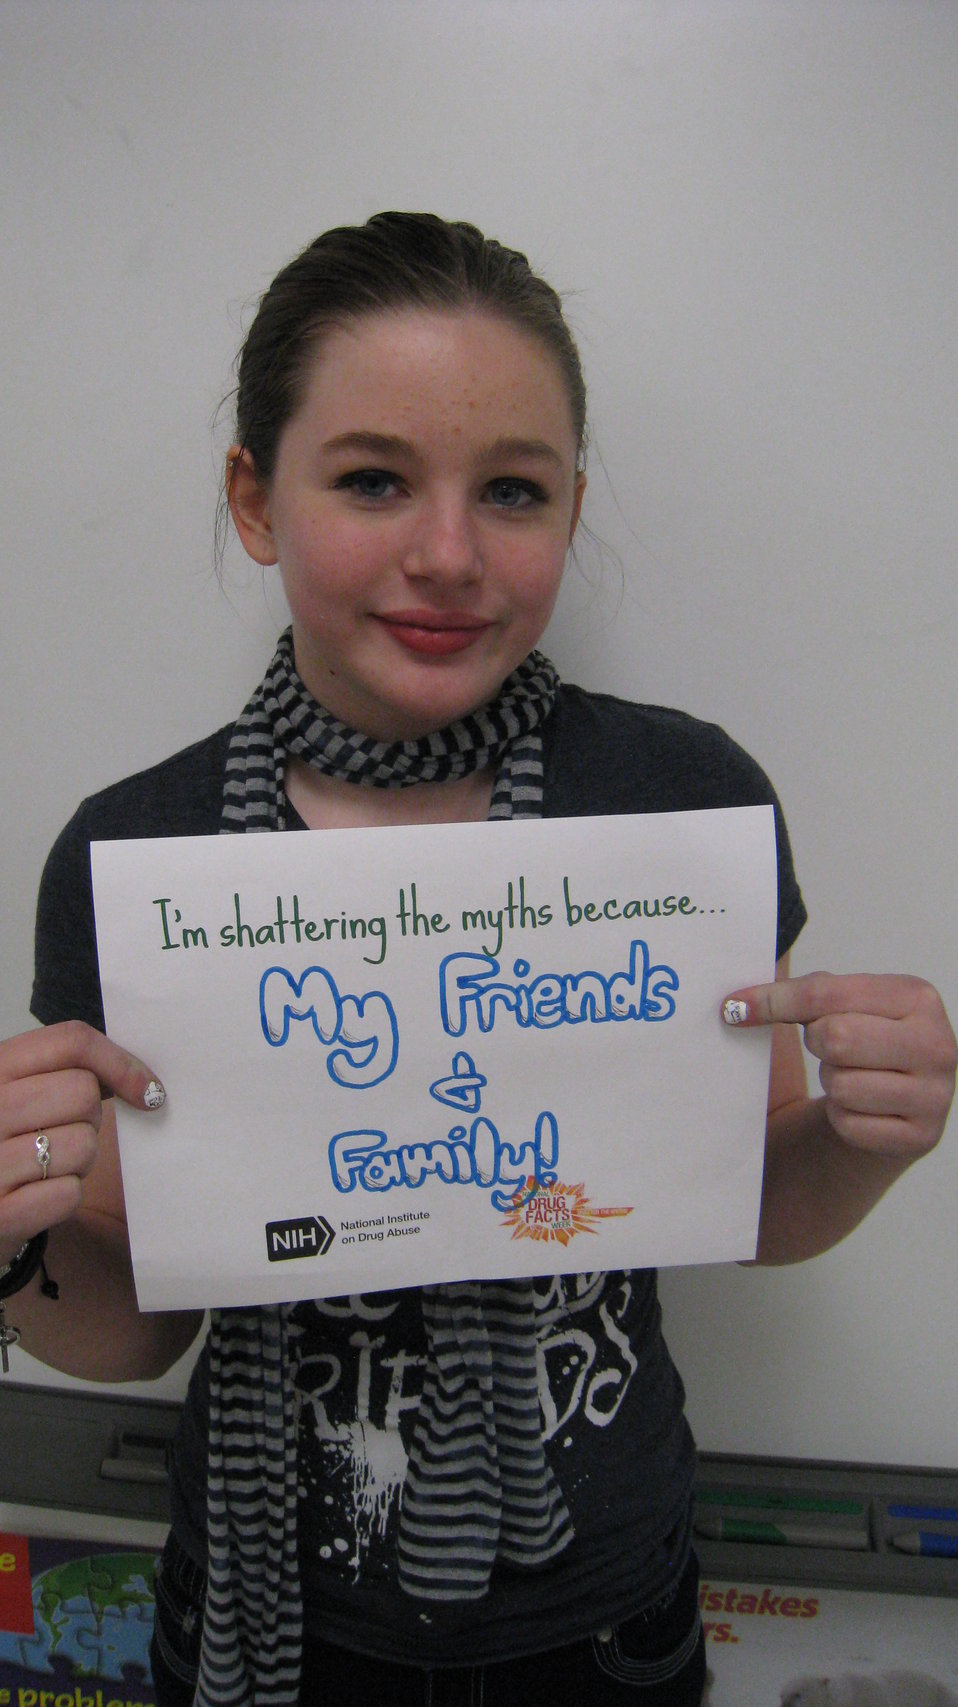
I'm Shattering the Myths Because...

Teenagers from the Van Buren County SAFE Coalition's, Youth Leadership Council (YLC) in Keosauqua, Iowa participate in various events during National Drug Facts Week, 2014.